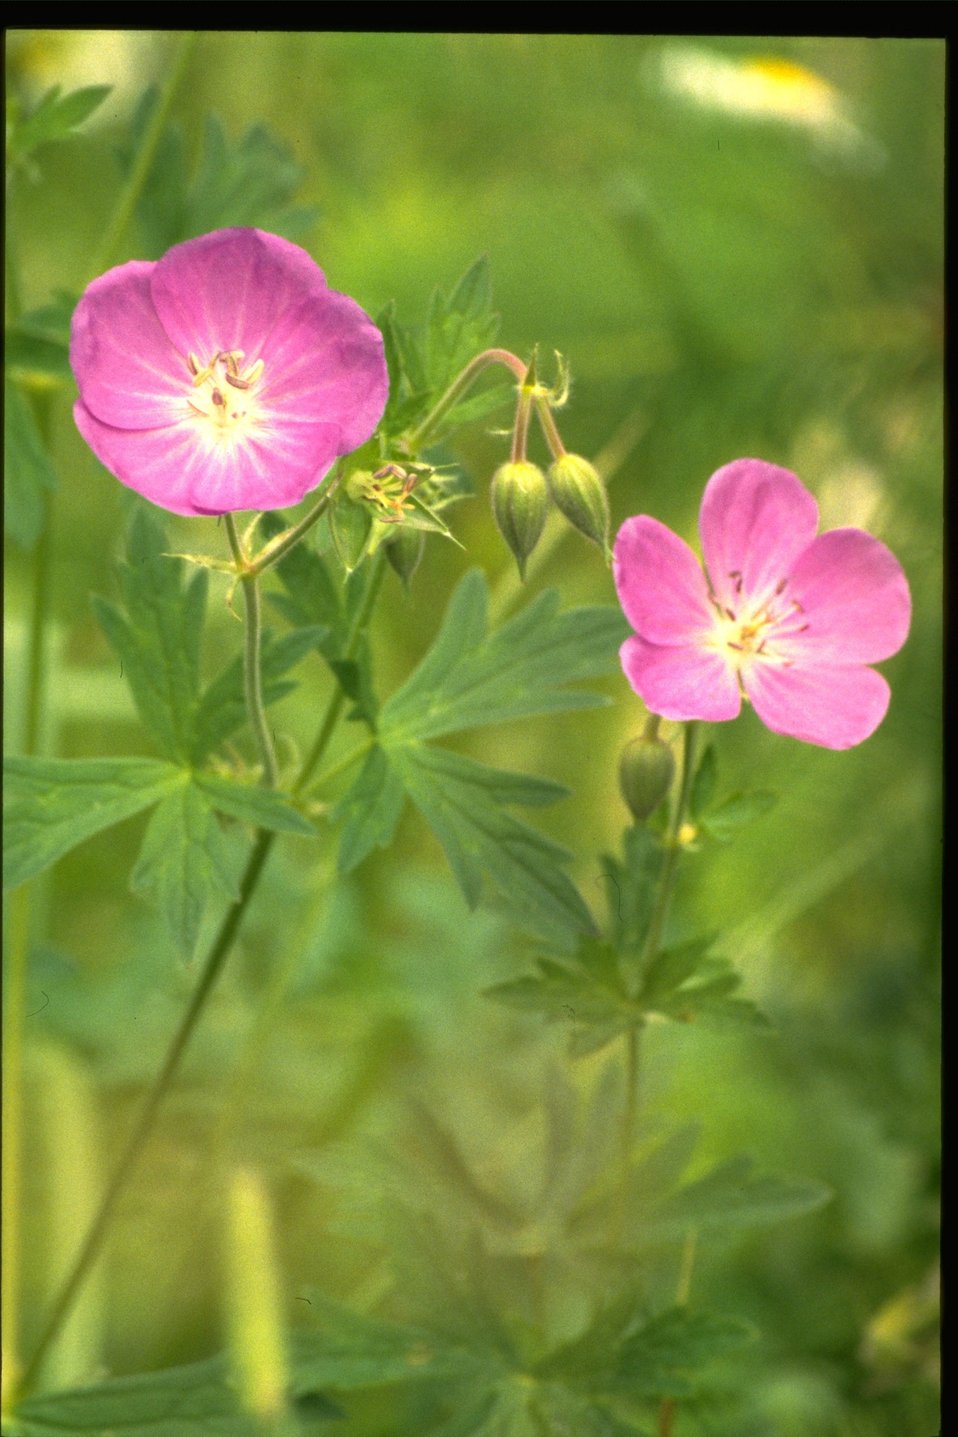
Medium shot of Geranium oreganum.